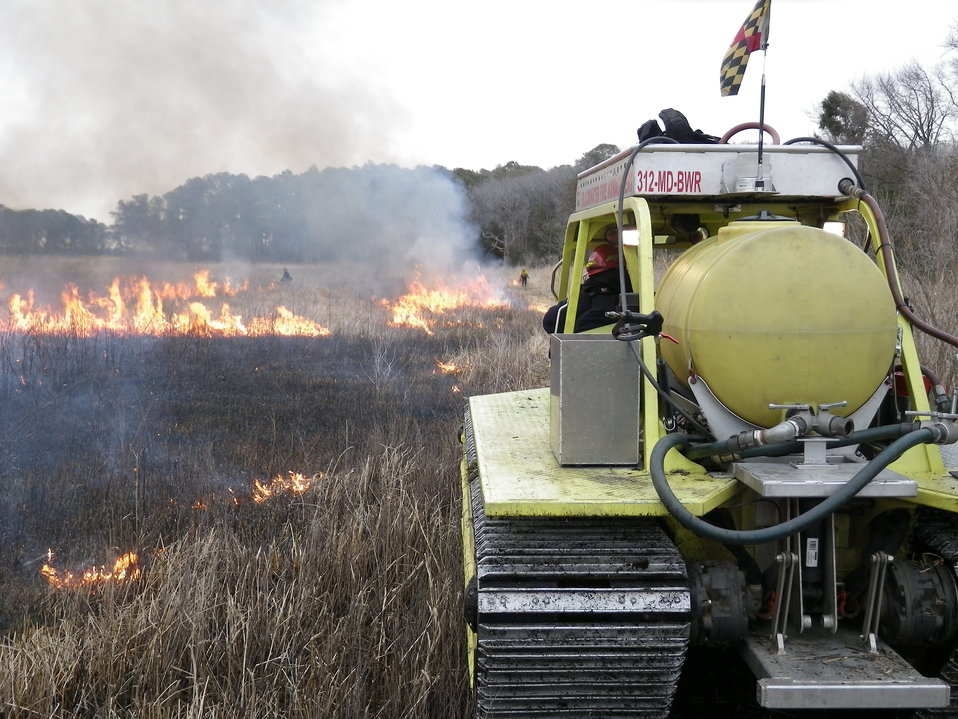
Marshmaster at Maryland Wildlife Refuge

March, 2011, Eastern Neck National Wildlife Refuge, Maryland: A tracked, amphibious vehicle makes a light footprint on brackish marsh during a controlled burn to stimulate growth of native plants and keep out invasive species.